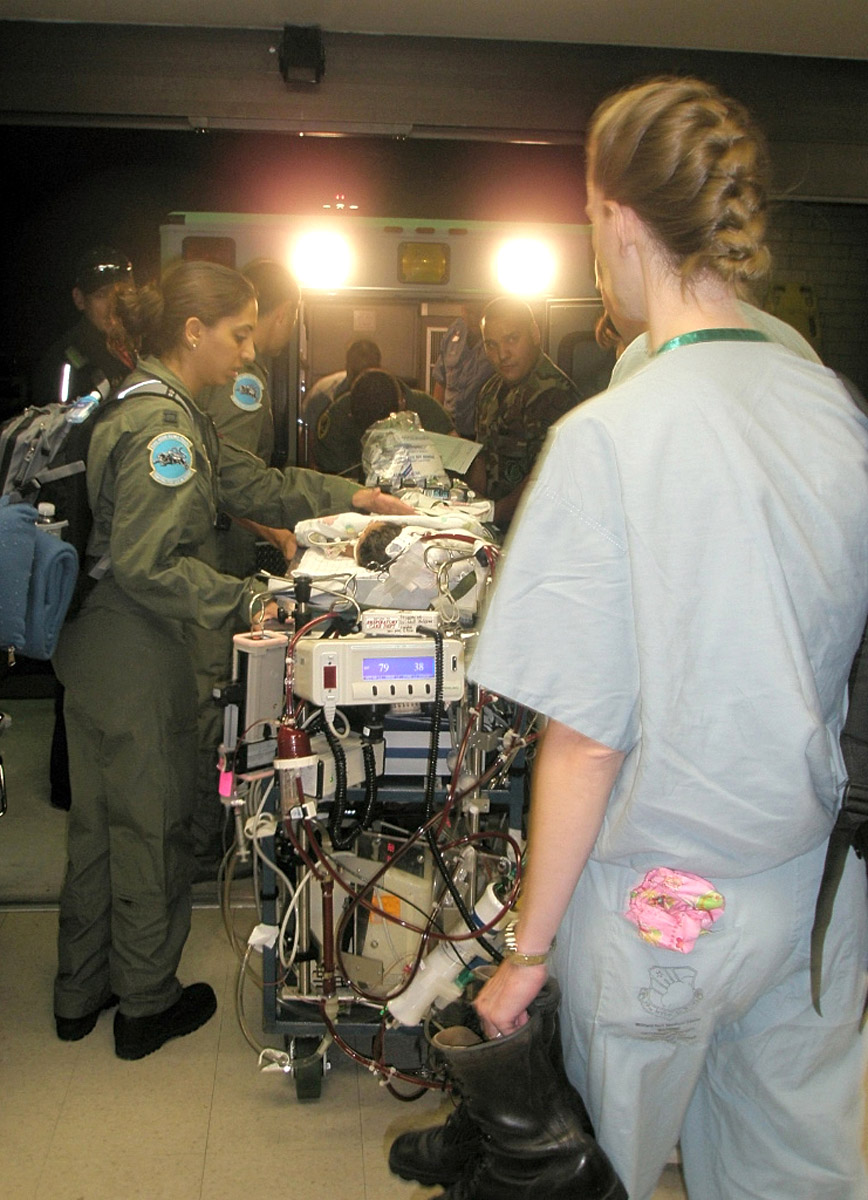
Wilford Hall Airmen aid Hurricane Ike evacuees

Members of the 59th Medical Wing critical care air transport team transport an infant from a Corpus Christi, Texas, hospital to Wilford Hall Medical Center Sept. 9 at Lackland Air Force Base, Texas. The baby was moved to WHMC in anticipation of Hurricane Ike hitting the Texas coastline. Alannah Miranda Garcia remains on extracorporeal membrane oxygenation, a heart-lung bypass machine in the WHMC neonatal intensive care unit. Robert Digeronimo)